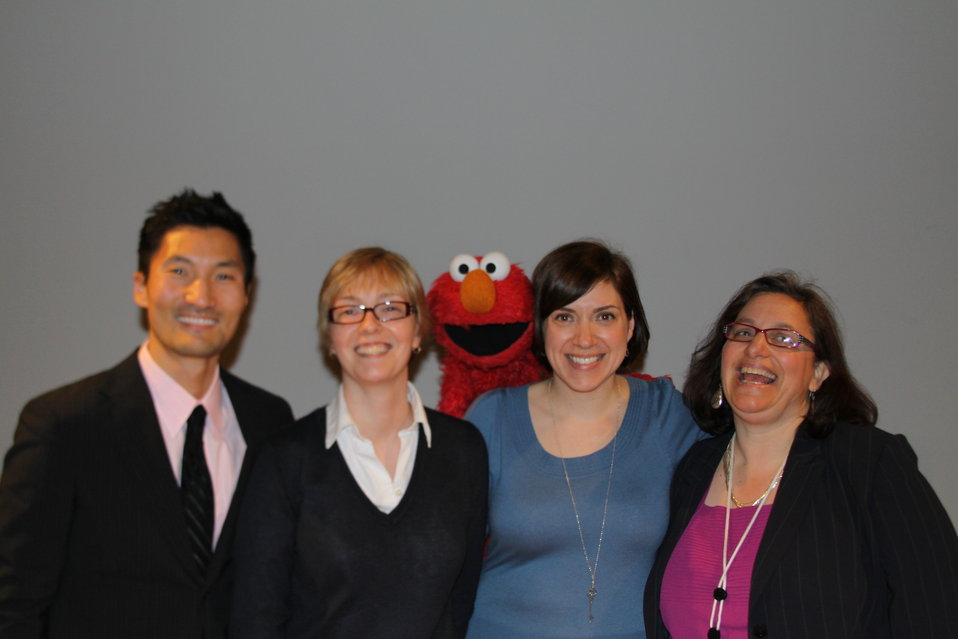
March 12, 2010- Smithsonian Broadband with Elmo